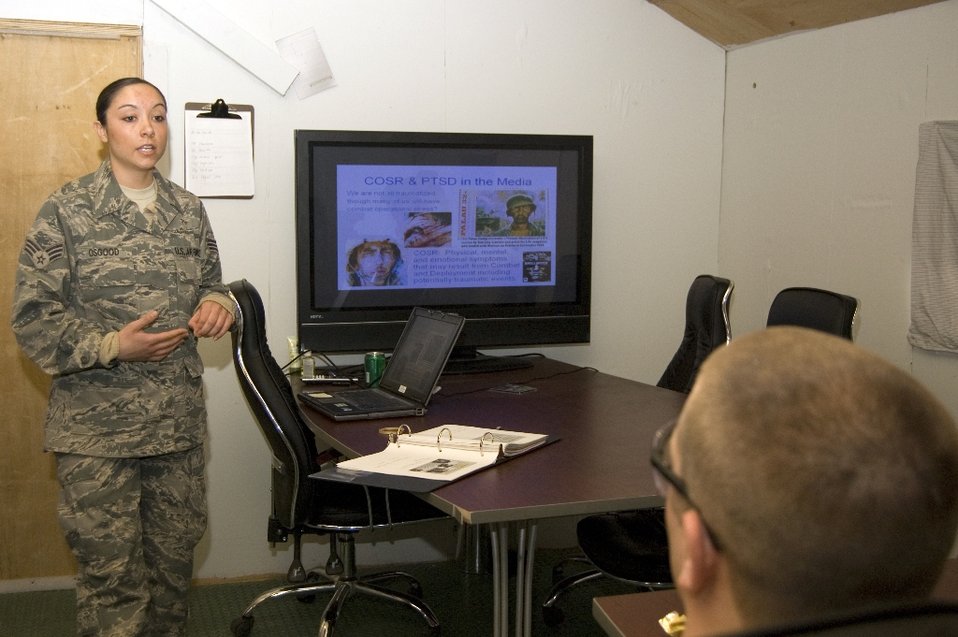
Mental health clinic opens at Bagram

Senior Airman Jessica Osgood teaches a class on warrior resiliency Feb. 23 at the Bagram Freedom Restoration Center at Bagram Airfield, Afghanistan.